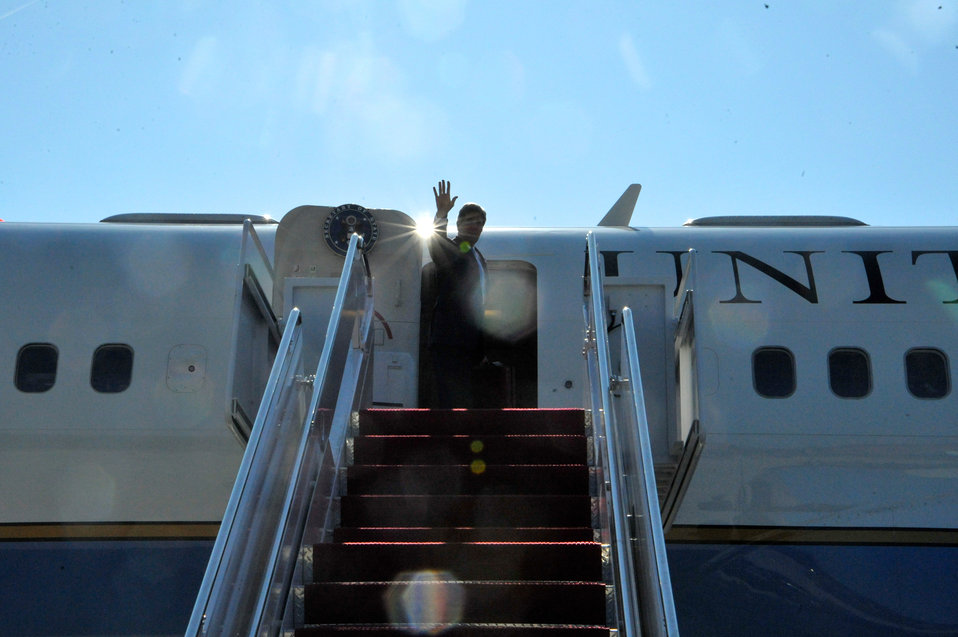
Secretary Kerry Sets Off for a 12-Day Trip

U.S. Secretary of State John Kerry waves goodbye as he prepares to set off from Andrews Air Force Base on a 12-day trip to Doha, New Delhi, Jeddah, Kuwait City, Amman, Jerusalem, and Bandar Seri Begawan on June 21, 2013.